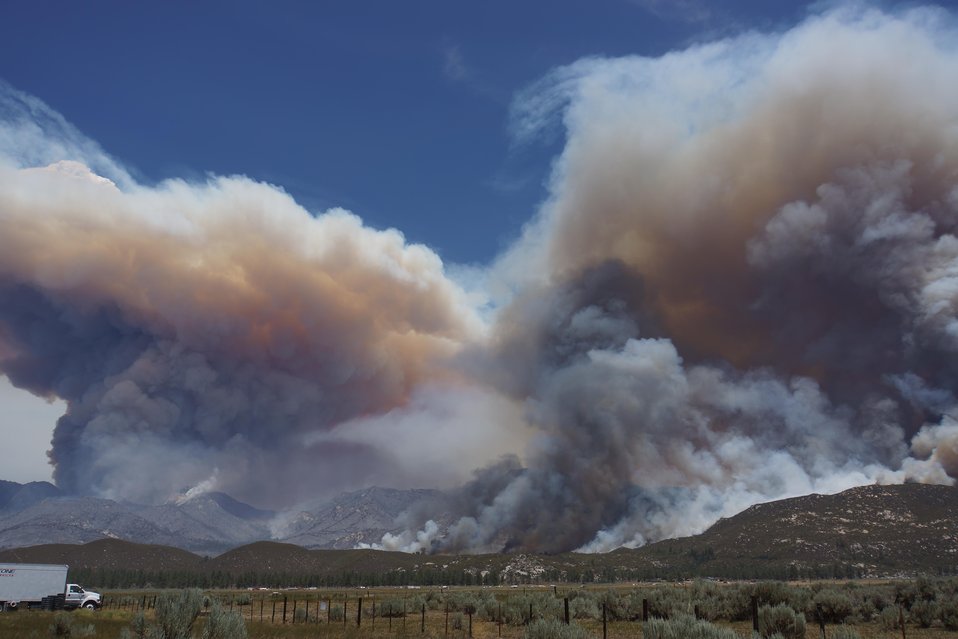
Mountain Fire in the San Bernardino National Forest in California began on Jul. 15, 2013 and its cause is under investigation. The fire has consumed approximately 27, 332 acres. The fire is approximately 85 % contained.